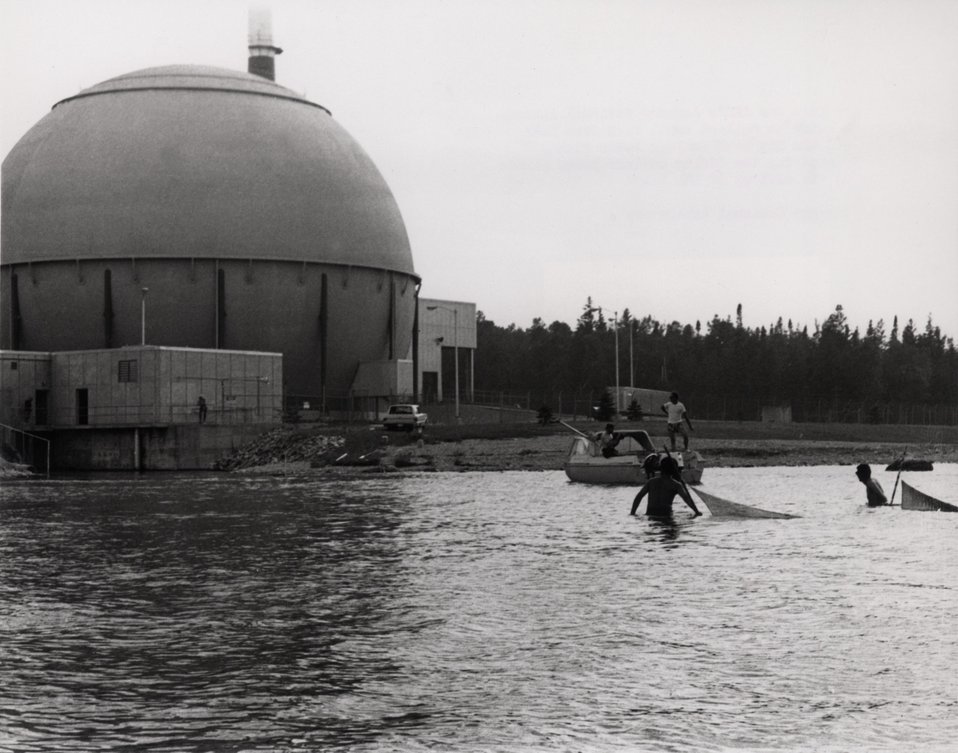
Researchers use a seines to collect small fish from Lake Michigan off the Big Rock Nuclear Plant.